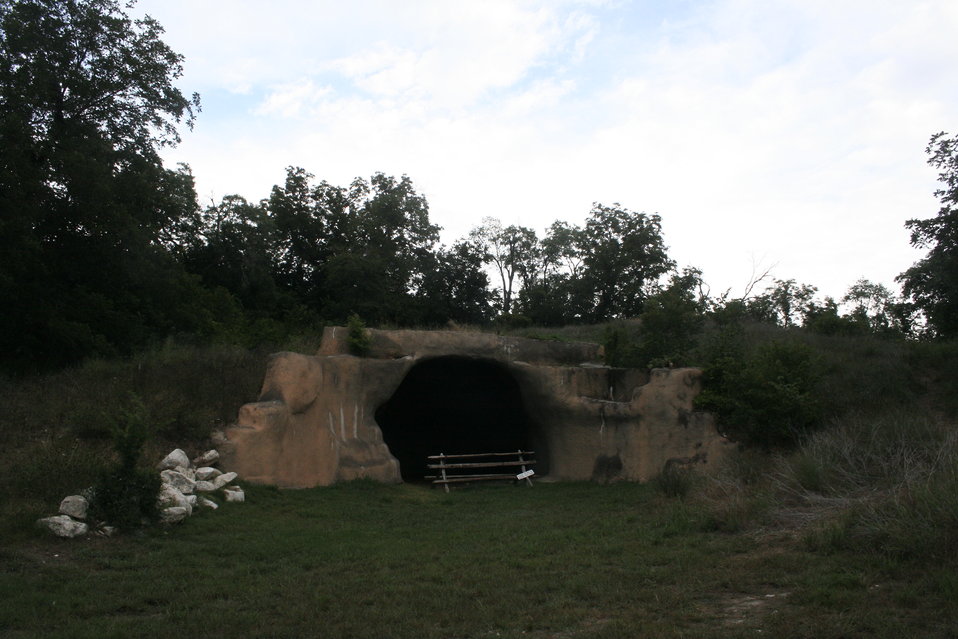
Bamburger Chiroptorium